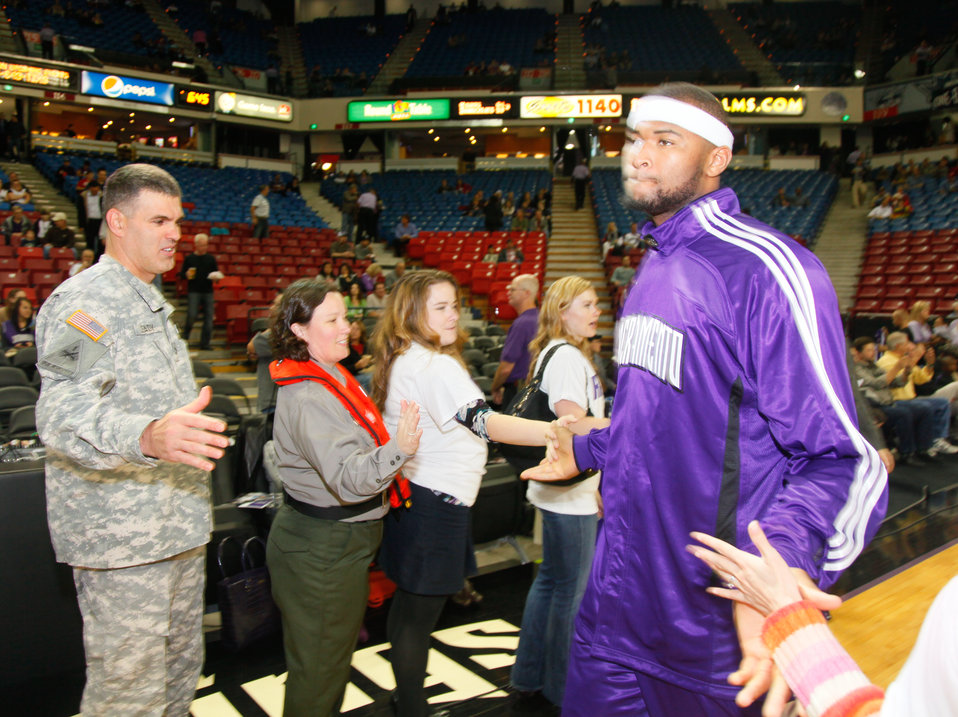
SACRAMENTO, Calif. (Nov. 12, 2010) – Col. Bill Leady (right), commander of the U.S. Army Corps of Engineers Sacramento District, and district park ranger Terry Hershey (second from left) greet Sacramento Kings player DeMarcus Cousins before the Kings’ Military Appreciation Night game here Nov. 10. The Sacramento District was recognized along with fellow military servicemembers during opening ceremonies and hosted a welcome booth to explain the Corps’ mission and educate attendees about levee safety, water safety and job opportunities with the Corps.